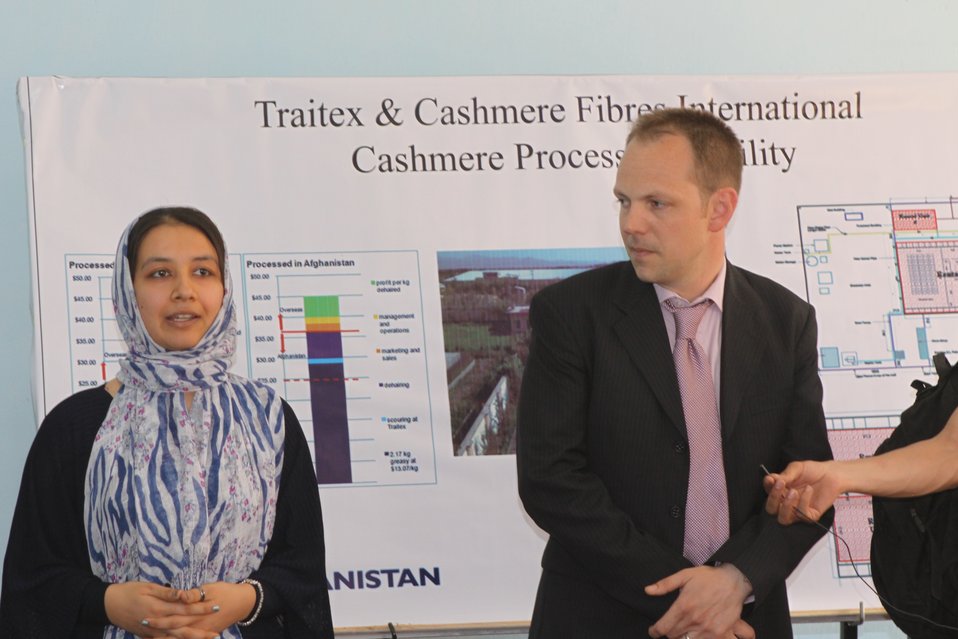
100525 Hirat Textile Company 720